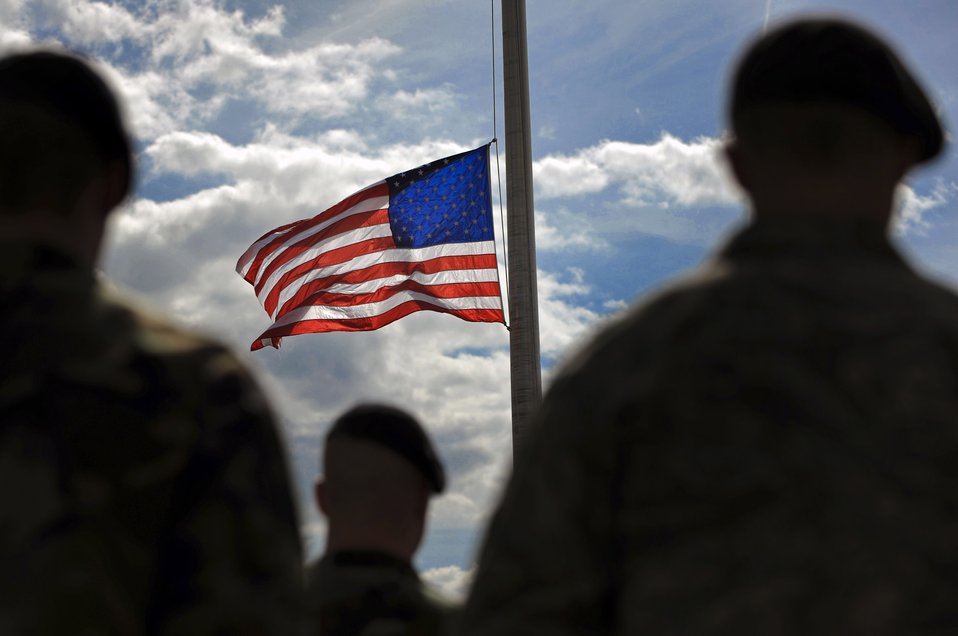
Honoring those who serve and protect

Airmen watch the flag lowered to half-staff during a special Memorial Day retreat May 15 at Ellsworth Air Force Base, S.D.